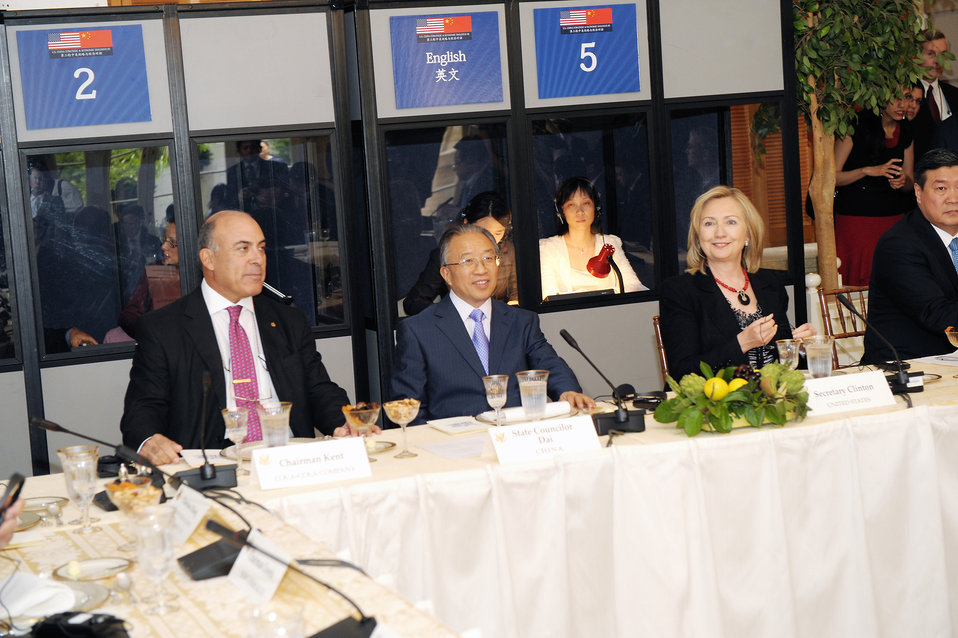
Secretaries Clinton and Geithner Co-Host a Luncheon

U.S. Secretary of State Hillary Rodham Clinton and U.S. Secretary of the Treasury Timothy Geithner co-host a luncheon with Chinese Vice Premier Wang, Chinese State Councilor Dai, and U.S. and Chinese business leaders, at the Blair House in Washington, D.C., on May 10, 2011.